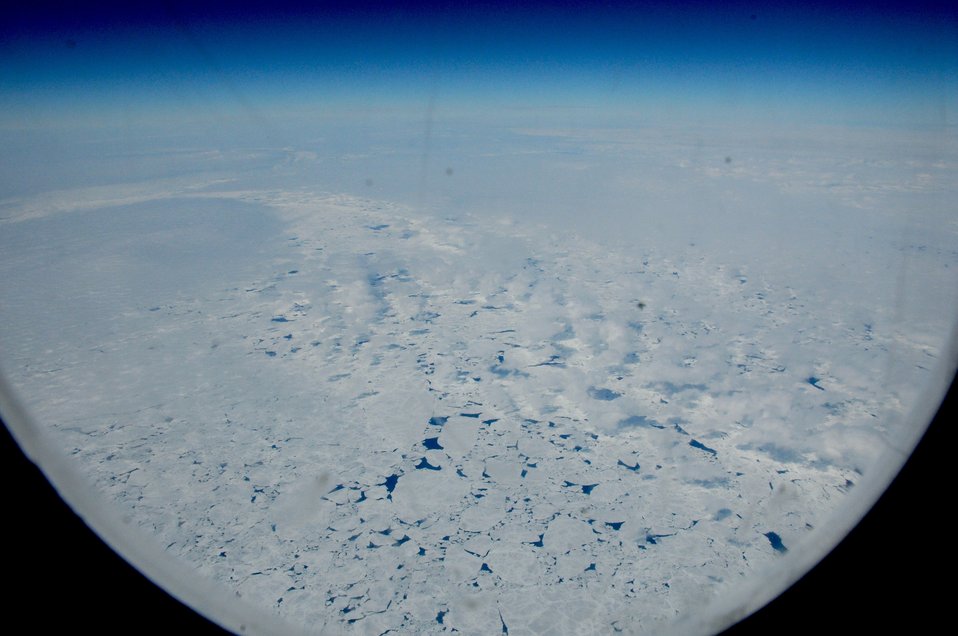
C-17s support Operation Deep Freeze

A C-17 Globemaster III flies over the Ross Sea Dec. 25, 2010, during a flight from Christchurch, New Zealand, to McMurdo Air Station, Antarctica. The aircraft is assigned to the Air Force Reserve Command’s 728th Airlift Squadron at McChord Air Force Base, Wash. The flight was turned around as bad weather made it too difficult to land in Antarctica.